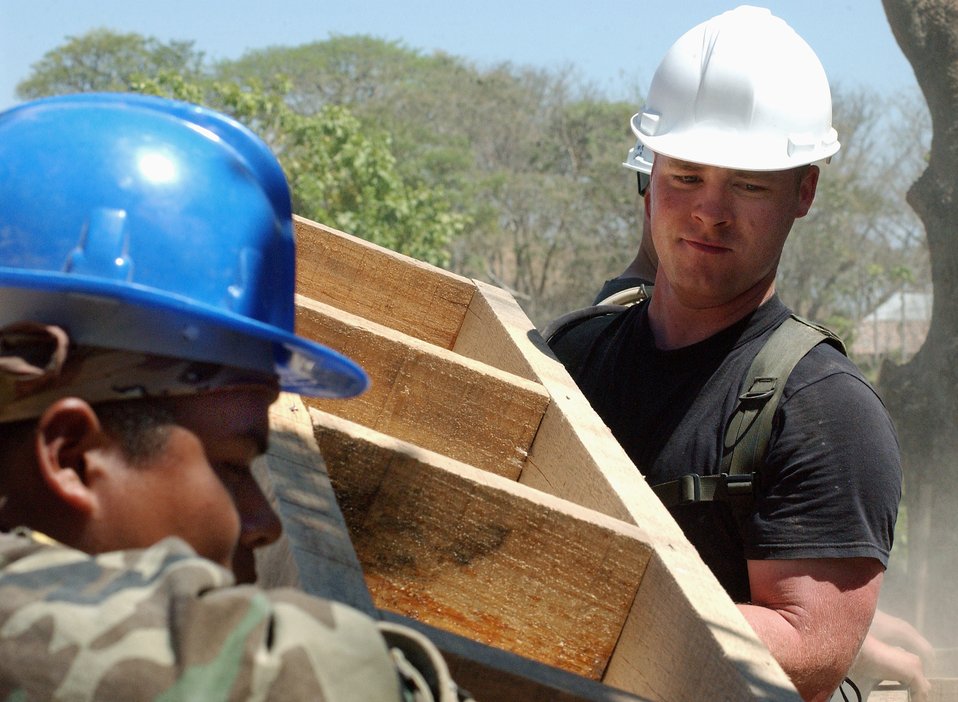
Airmen examining New Horizons

SANTA CLARA, El Salvador -- Staff Sgt. Jason Silcott (right) and a local civil engineer carry a footer frame for a new clinic being built here. The civil engineers are part of New Horizons 2005, a readiness training exercise providing humanitarian assistance to people in El Salvador. Air Force active-duty and Reserve civil engineers are working with about 180 El Salvadorian counterparts during the three-month exercise. Sergeant Silcott is assigned to the 99th Civil Engineer Squadron at Nellis Air Force Base, Nev.